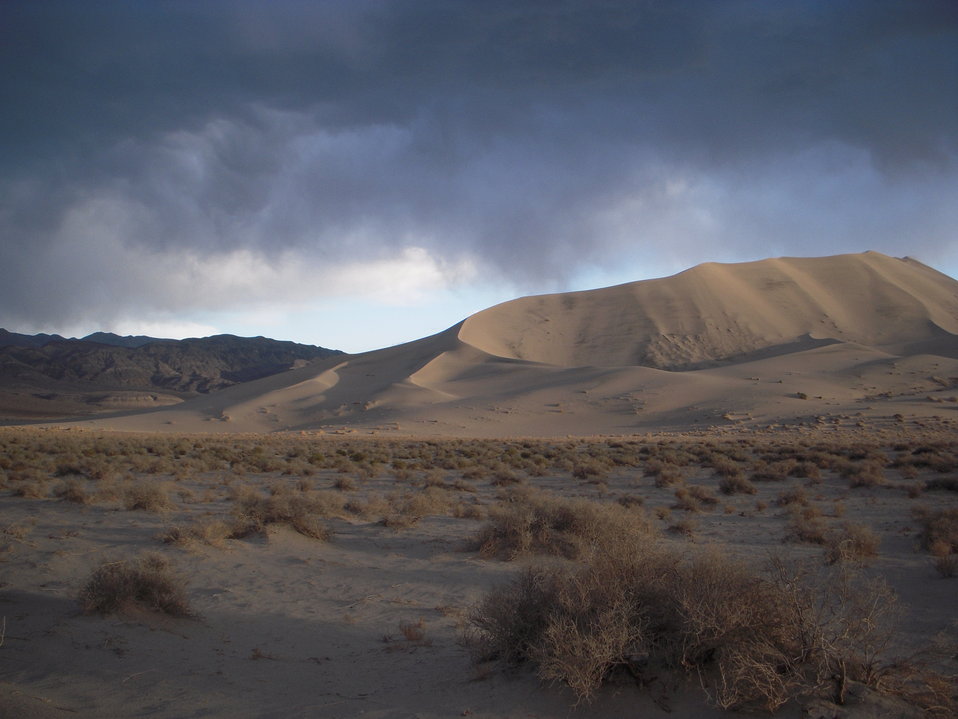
Eureka Dune

The Eureka Valley is in Death Valley National Park, California. There are three dune systems in the Valley - Eureka Dune, Saline Spur, and Marble Canyon.